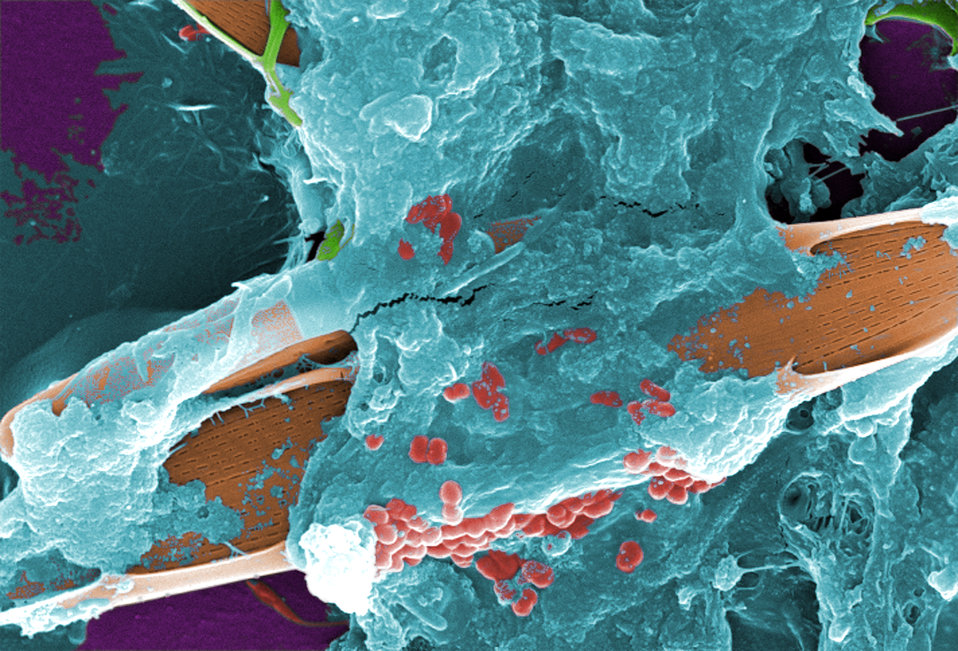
This digitally-colorized scanning electron micrograph (SEM) of an untreated water specimen extracted from a wild stream mainly used to control flooding during inclement weather, revealed the presence of unidentified organisms, which included bacteria, protozoa, and algae. Visible in this particular image were a number of different microorganisms including elongated diatoms, and an amorphic gelatinous biofilm mass, which had enveloped amoeboid and bacterial organisms.